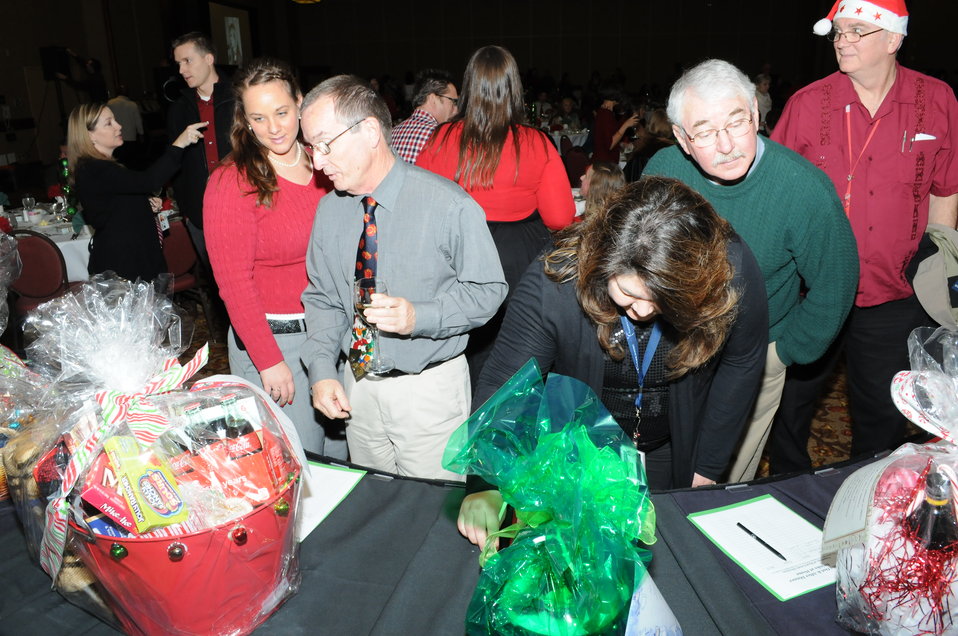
Sacramento District Holiday Party 2011